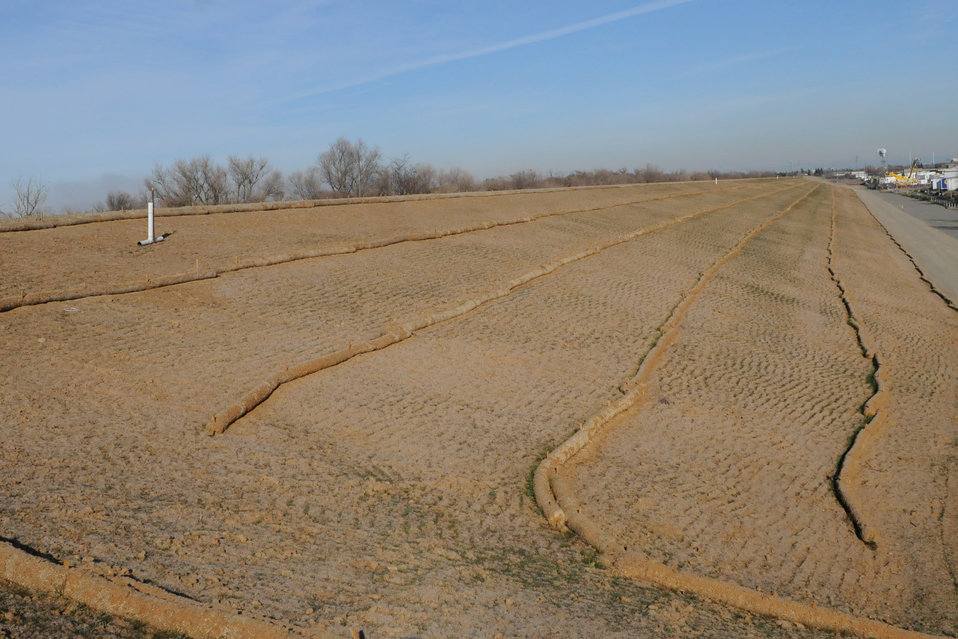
Corps completes Yolo Bypass levee repairs

The U.S. Army Corps of Engineers Sacramento District repaired a 2,000-foot stretch of slumping levee separating highway 80 from the Yolo Bypass, adding a gravel drain to help eliminate moisture that was weakening the levee’s foundation. The levee has been seeded and will be monitored until grasses, planted to help prevent erosion, begin to fill in. The repair work was completed as part of the West Sacramento Project, a joint effort with the West Sacramento Area Flood Control Agency and the Central Valley Flood Protection Board to improve the levees surrounding West Sacramento.